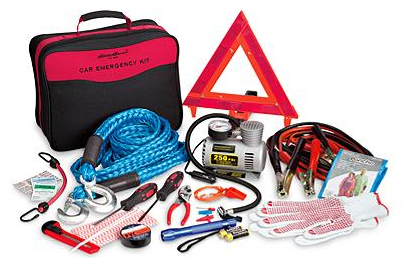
Winter tips

Putting together a winter safety kit for the car is essential in case of an emergency. Some of the items in the kit should be a cell phone with a charger, blankets and warm clothes, a flashlight with extra batteries and a first aid kit.